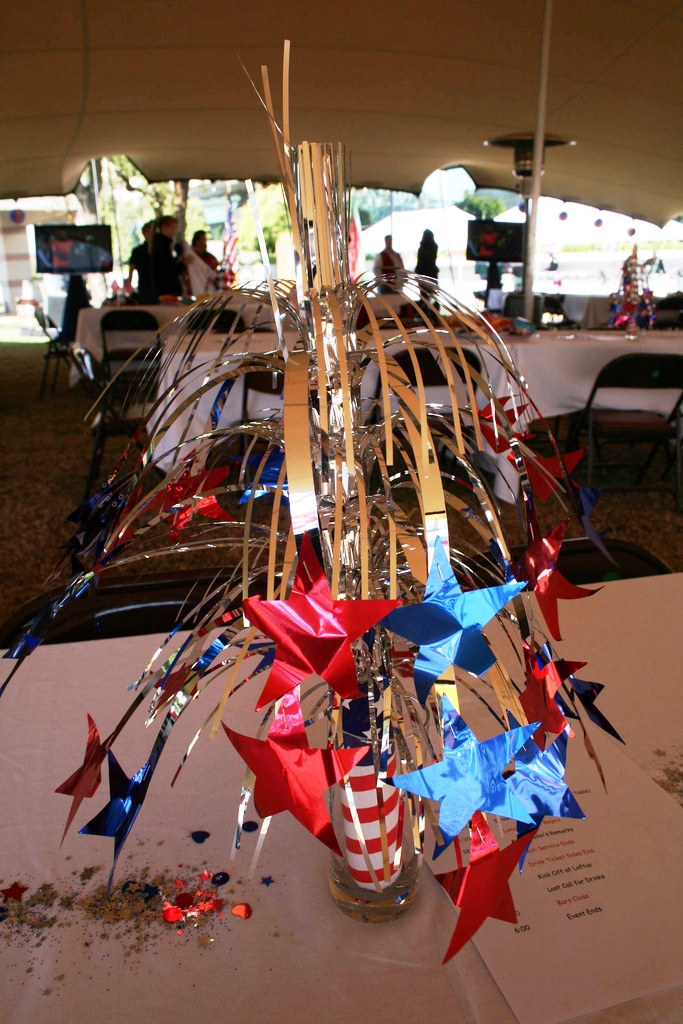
Red, white, and blue centerpieces covered the tables at the Team USA pep rally before the U.S. vs. Algeria World Cup match on June 23, 2010, in Pretoria, South Africa.